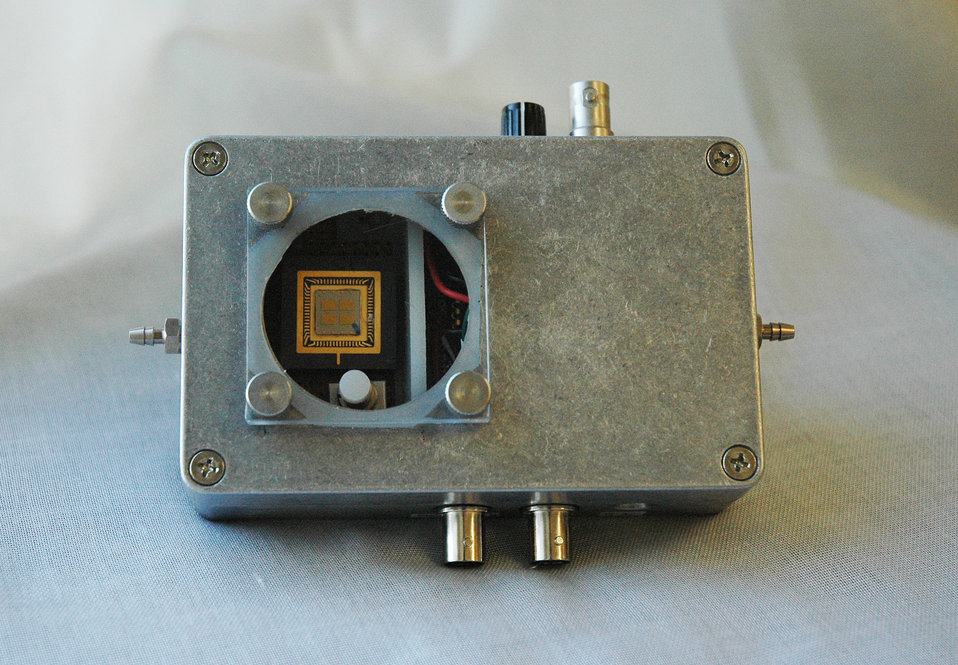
NanoSoccer

The 2009 RoboCup Nanosoccer competition will be played on the gold-colored microchip seen through the window of the 'world's smallest soccer stadium.' The chip is divided into 16 playing fields each the size of a grain of rice.